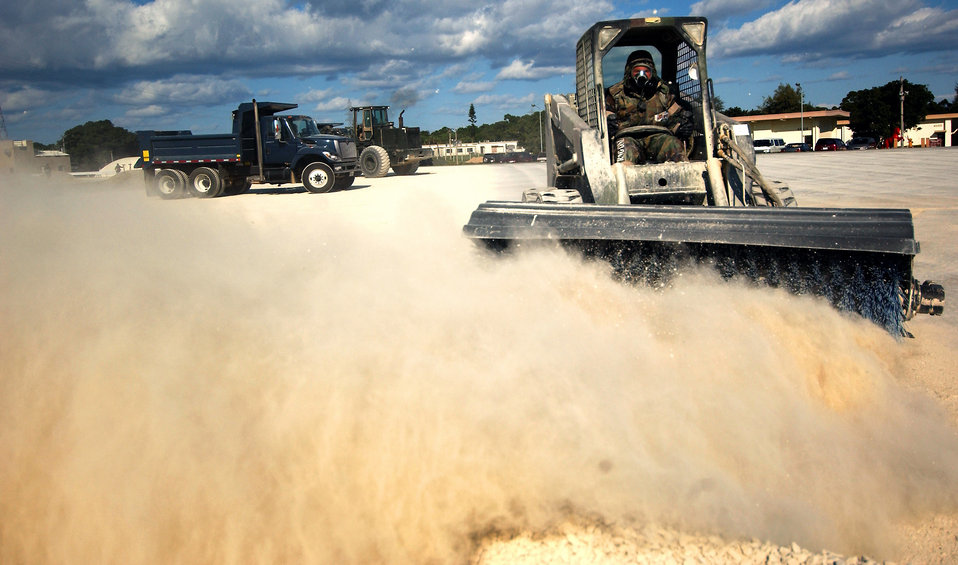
Airmen train for contingency operations during Silver Flag

Civil engineers practice reconstituting a damaged airfield following simulated air attacks during Silver Flag Nov. 24 at Kadena Air Base, Japan. During the exercise, which is run by Det. 1, 554th RED HORSE Squadron members, Airmen trained to establish and sustain a forward operating base in simulated wartime conditions.